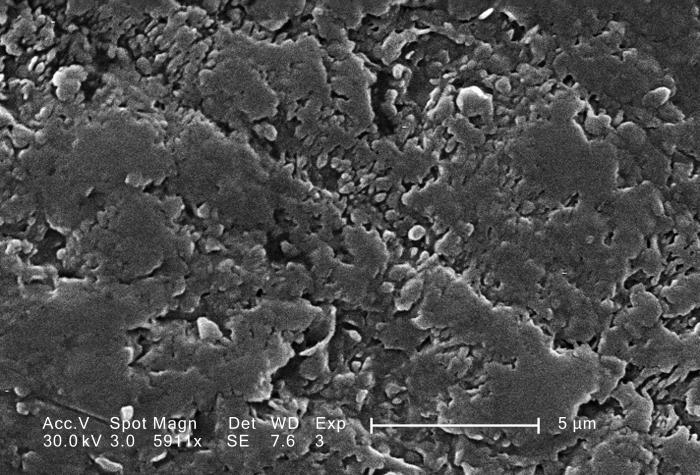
This scanning electron micrograph (SEM) shows the highly magnified rough surface of a Vitis sp., white table grape; Magnified 5911x. Note that what would appear to be a smooth surface by the unaided eye, is actually a roughened surface, capable of harboring bacteria in its cracks and crannies, and therefore, should be thoroughly washed before consuming these scrumptious fruits.Fresh Facts: